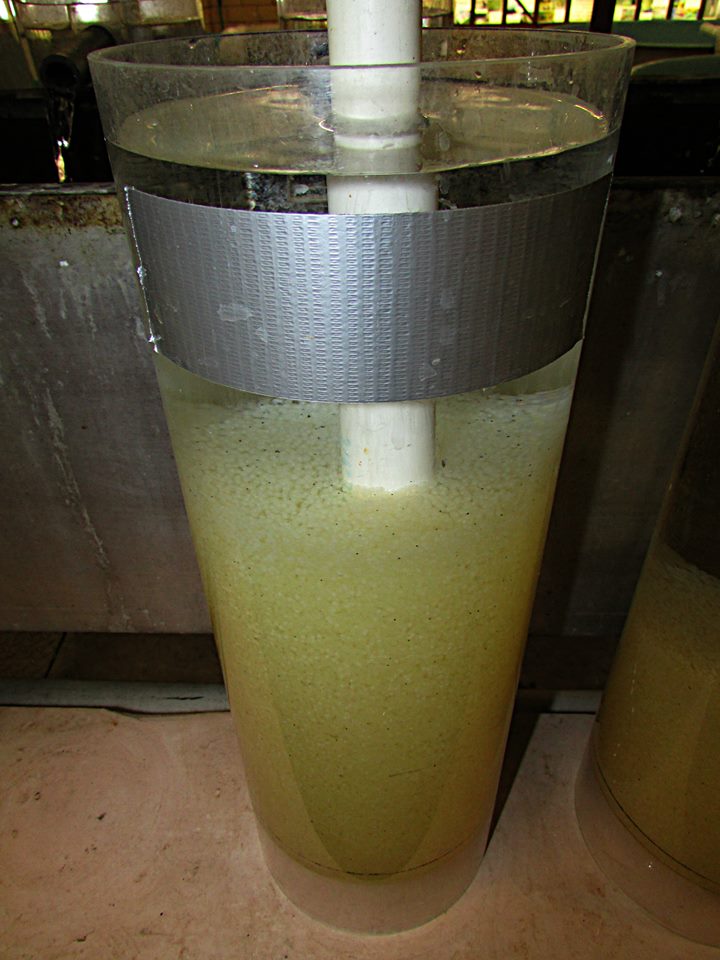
Eggs

What fish do you think these eggs belong to?

They just finished hatching and will get stocked throughout the spring and summer. It's estimated that anglers spend over 1 million hours a year fishing for this species on South Dakota's reservoirs.